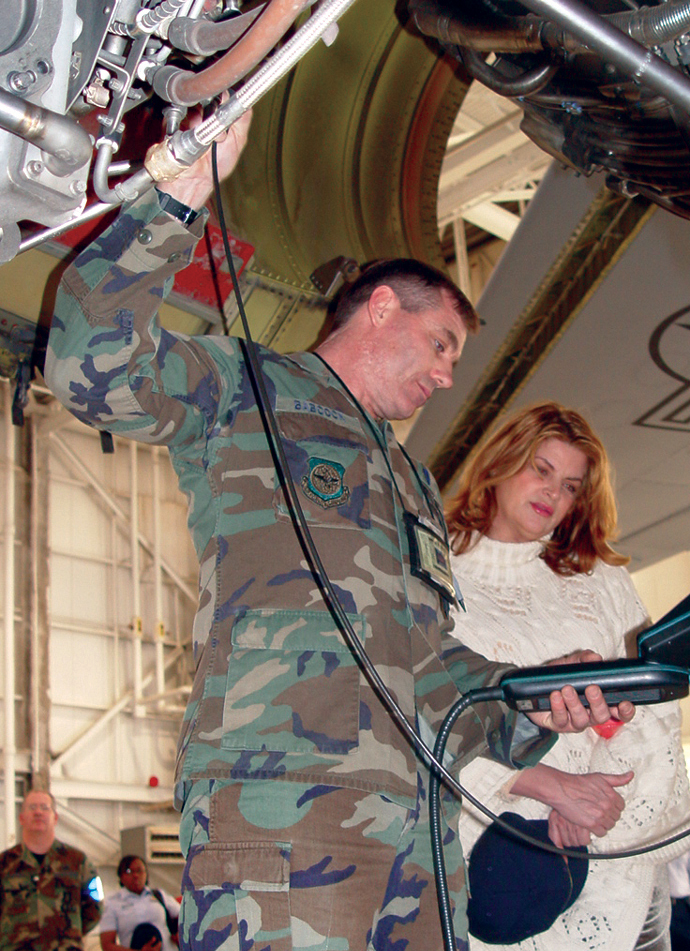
Kirstie Alley 'cheers' for McConnell

MCCONNELL AIR FORCE BASE, Kan. -- Master Sgt. Gary Babcock shows Golden Globe-winning actress Kirstie Alley the inner workings of the KC-135 Stratotanker engine. Ms. Alley visited here March 8 to show her support for the troops. Sergeant Babcock is assigned to the 22nd Maintenance Squadron here.